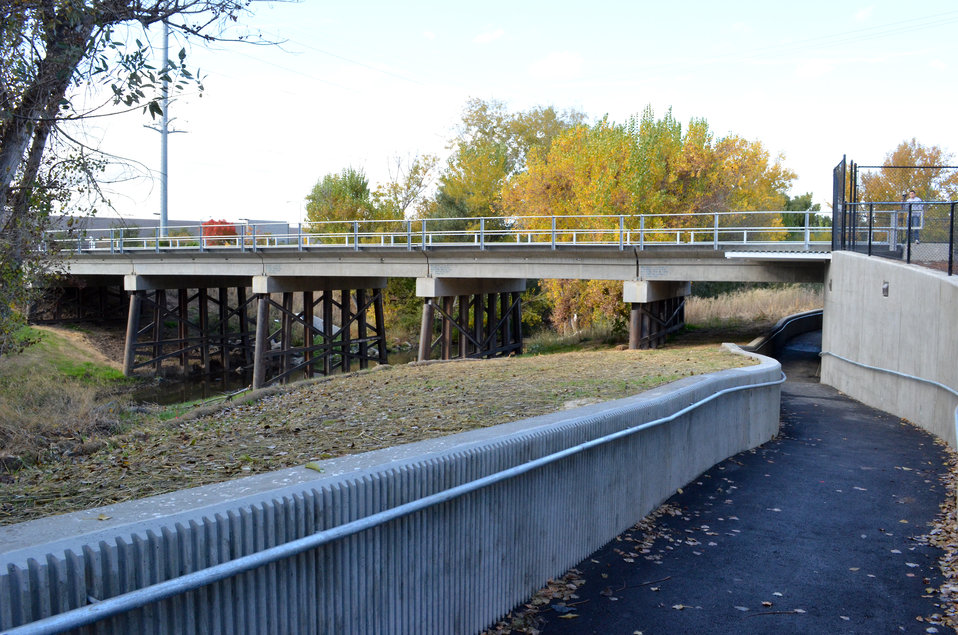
Restored path opens November, 2011

A newly opened commuter path shown Nov. 21, 2011, allows commuters to safely travel under the new railroad bridge in San Jose, Calif. The bridge is the last piece in the Sacramento District’s decades-long Guadalupe River Project to reduce flood risk for the city.